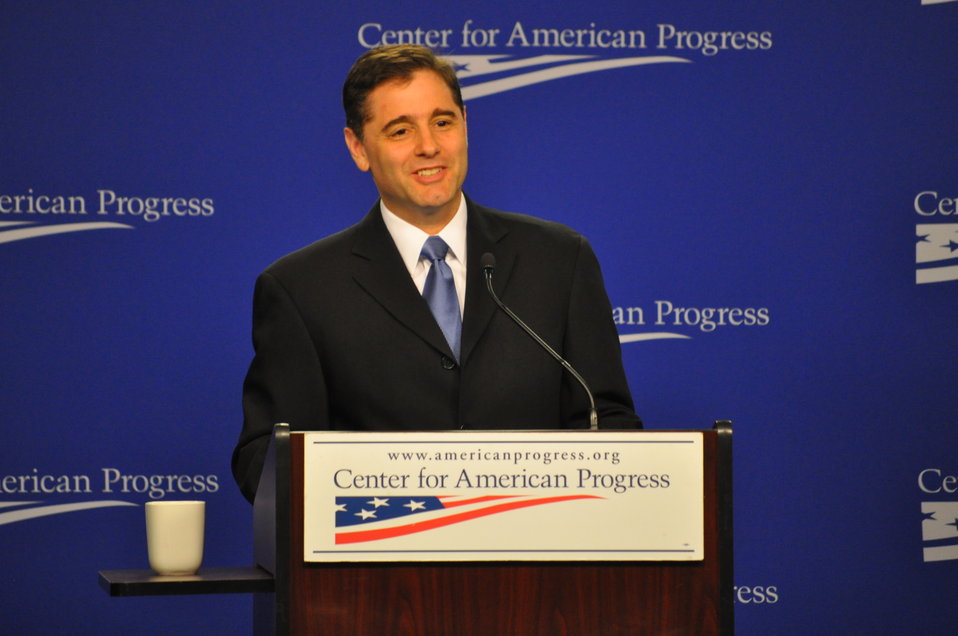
'Cramming' and Mystery Fees Event

Julius Genachowski, Chairman, Federal Communications Commission